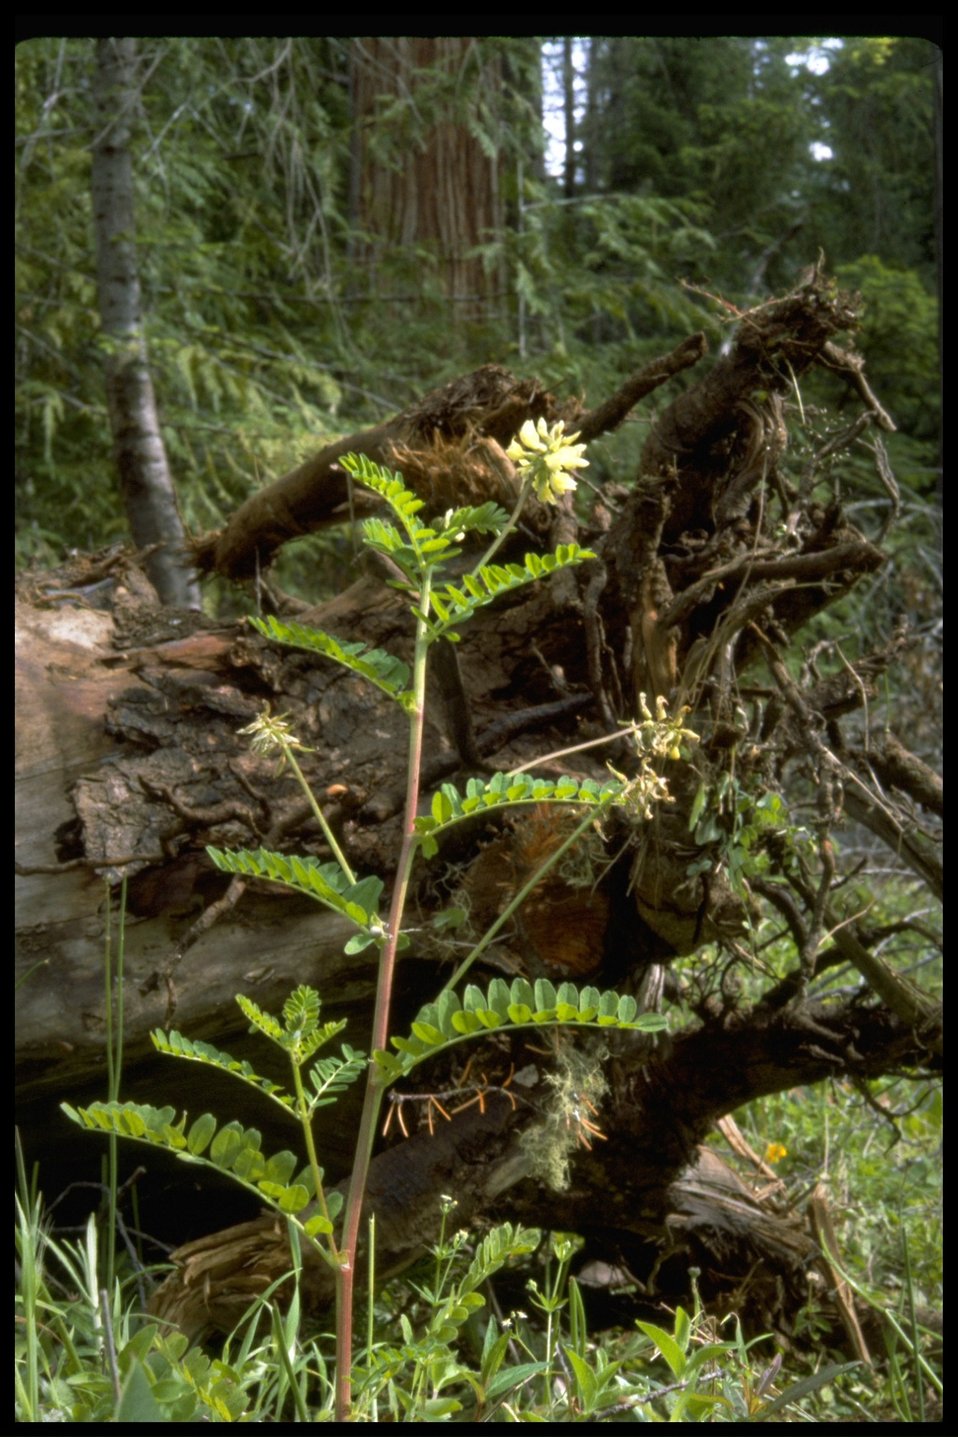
Medium shot of woodland milkvetch (Astragalus umbraticus).